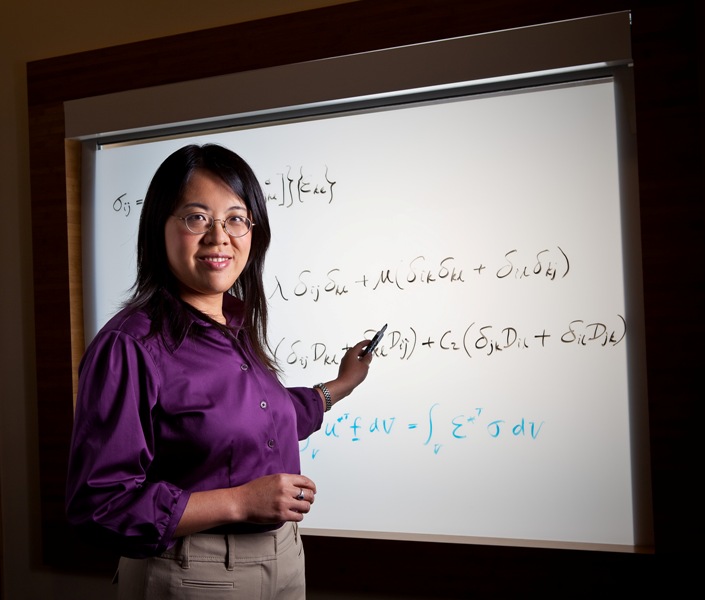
Xin Sun

Creativity, insight, and application are the hallmarks of Dr. Xin Sun’s applied mechanics and computational materials research at Pacific Northwest National Laboratory. Her advances in lightweight and high-strength materials (including steels) and modeling are vital to energy efficiency and renewable energy and have led to notable weight savings in the U.S. automotive industry. Xin is developing simulation and modeling capabilities for solid oxide fuel cells. Her modeling of physics properties are included as part of the solid oxide fuel cell multiphysics modeling code, or SOFC-MP, a commercial software tool, developed at PNNL, used by fuel cell developers. She also uses the continuum damage mechanics model, developed under DOE-funded programs, to understand fracture mechanisms behind transparent armor for the U.S. Army—work that may enable more resilient battlefield vehicles. A prolific contributor to the scientific community, Xin is on the ISRN Mechanical Engineering editorial board and serves as an associate editor on the ASME Journal of Offshore Mechanics and Arctic Engineering and American Welding Society Welding Journal. She also mentors staff and interns at PNNL and Washington State University, where she is a mechanical and materials engineering professor. Xin earned a naval architecture and ocean engineering undergraduate degree from China’s Shanghai Jiao Tong University. In only five years, she earned a master’s degree in mechanical engineering and a master’s and doctorate in naval architecture and marine engineering, all from the University of Michigan, Ann Arbor.

Read her full story at energy.gov/diversity/articles/women-energy-xin-sun